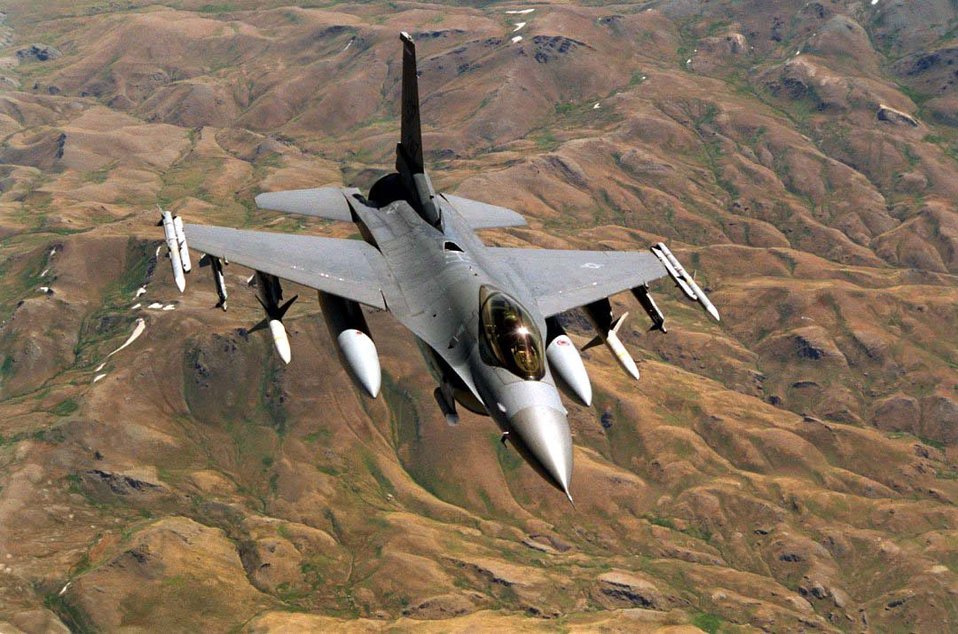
F-16 crashes northwest of Baghdad

An F-16 Flying Falcon, similar to the one in this photo, crashed near Baghdad, Iraq, Nov. 27.